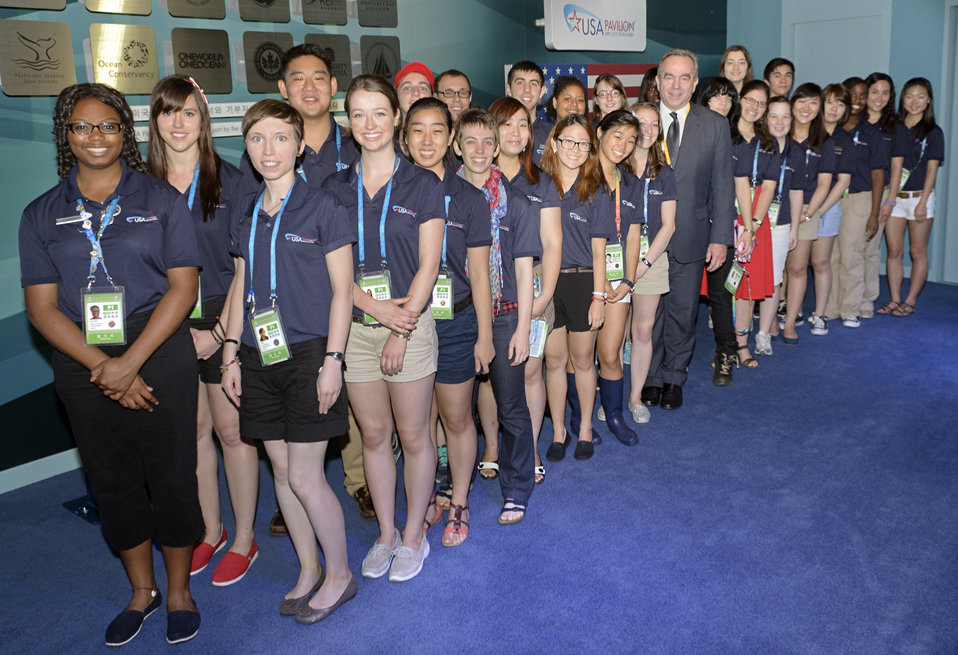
Assistant Secretary Campbell Meets With Student Ambassadors

Assistant Secretary of State for East Asian and Pacific Affairs Kurt Campbell meets with U.S. Student Ambassadors at the USA Pavilion 2012 in Yeosu, South Korea, on July 14, 2012.